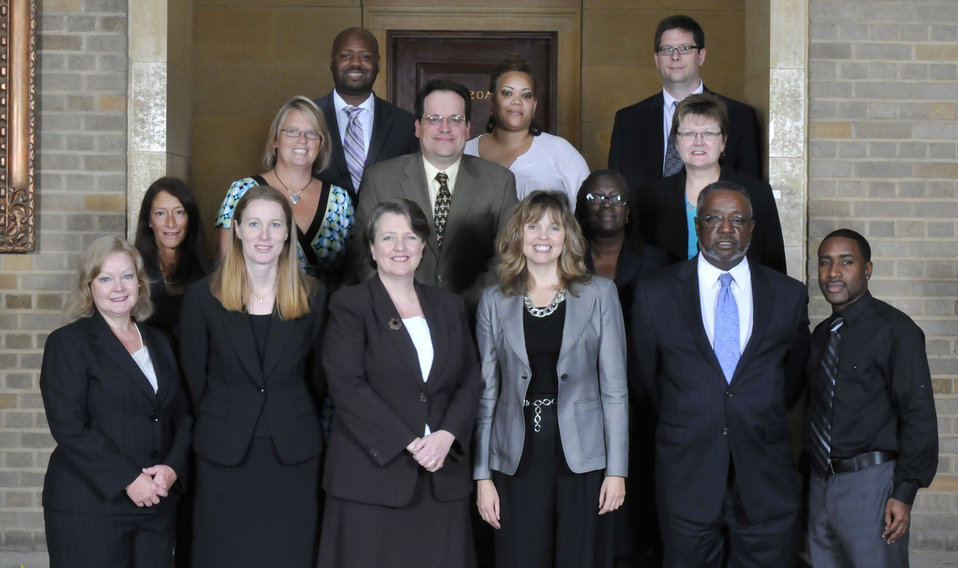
GovTrip Improvement Team
Offi ce of Chief Financial Officer, Washington, DC
Suzette M. Dittrich, Group Leader
For working collaboratively across USDA to increase our ability to manage travel effi ciently and eff ectively; save taxpayers’ dollars; and improve customer satisfaction and employees’ work lives.
On September 14, 2011 in the patio of the Whitten Building Patio of the US Department of Agriculture in Washington, DC.